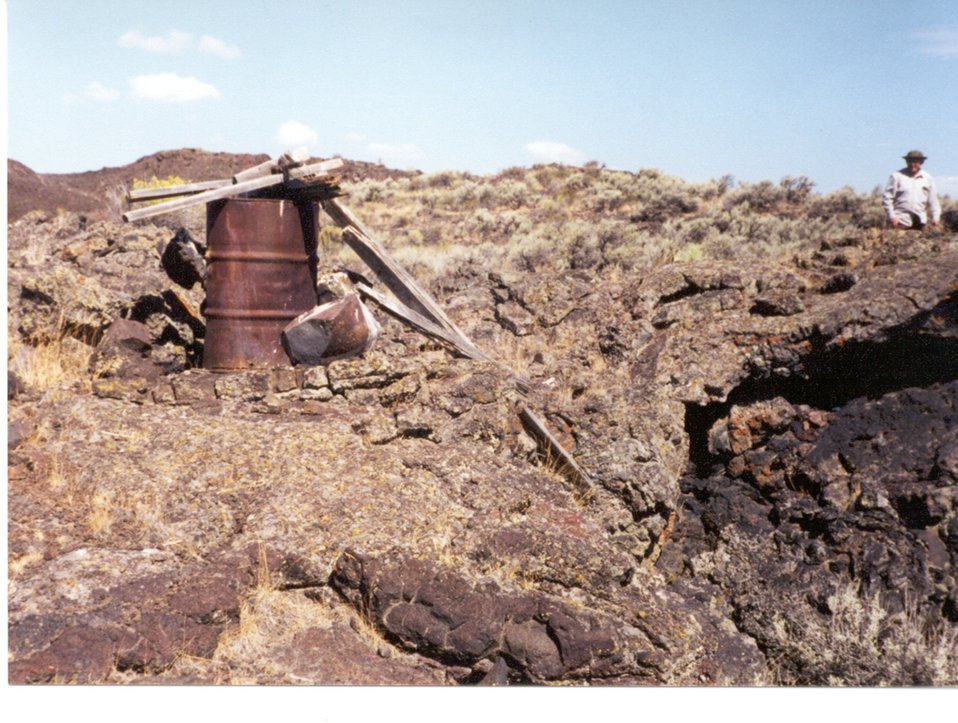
Water Hole on Rift Craters of the Moon Shoshone Field Office USRD Upper Snake River District